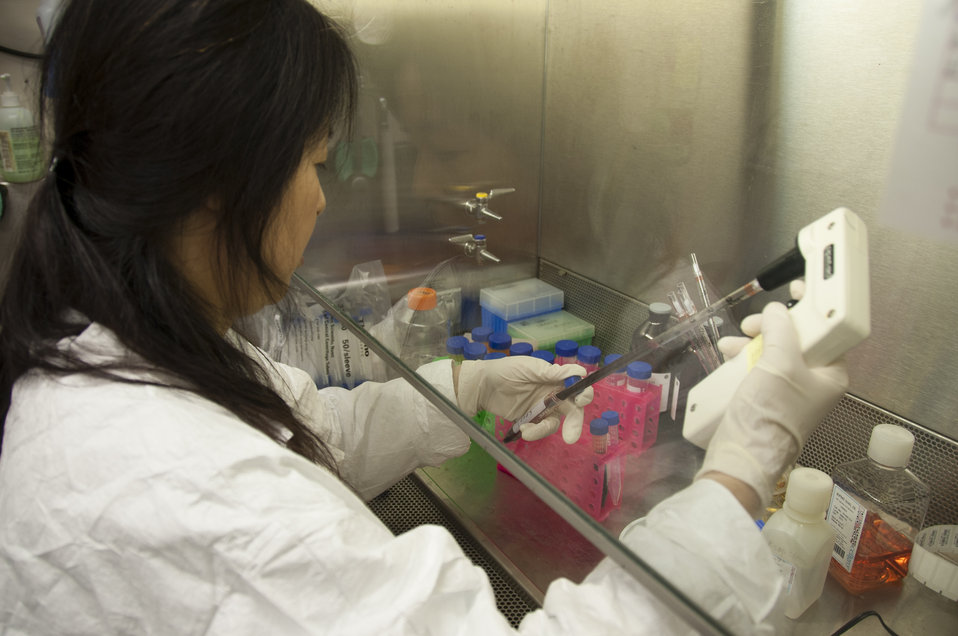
Blood Research: Saving Lives (8503)

Meihong Liu, Ph.D., working at FDA’s labs in the Office of Blood Research and Review, processes blood cells to create specific cell lines that can be frozen for long-term use in the laboratory. FDA is responsible for the safety of our nation’s blood supply and is at the forefront of evaluating and encouraging innovative technologies for protecting it.

Read this Consumer Update to learn more: Advances in Saving Lives with Blood